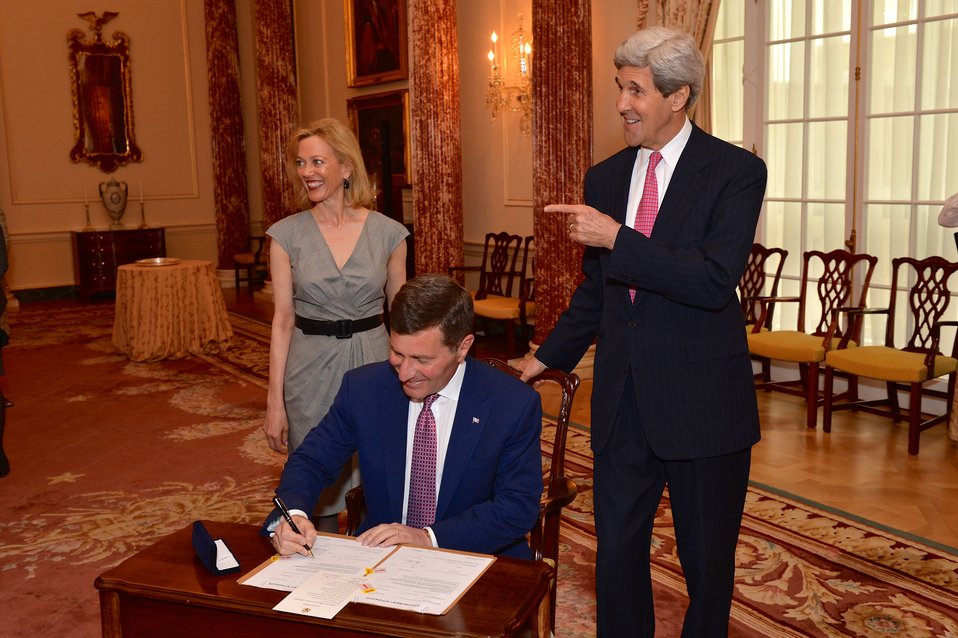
Ambassador Rivkin Signs Appointment Papers to Become Assistant Secretary for Economic and Business Affairs

With his wife, Susan Tolson, and U.S. Secretary of State John Kerry looking on, Ambassador Charles Rivkin signs his appointment papers to become the Assistant Secretary for Economic and Business Affairs at the U.S. Department of State in Washington, D.C., on April 15, 2014.